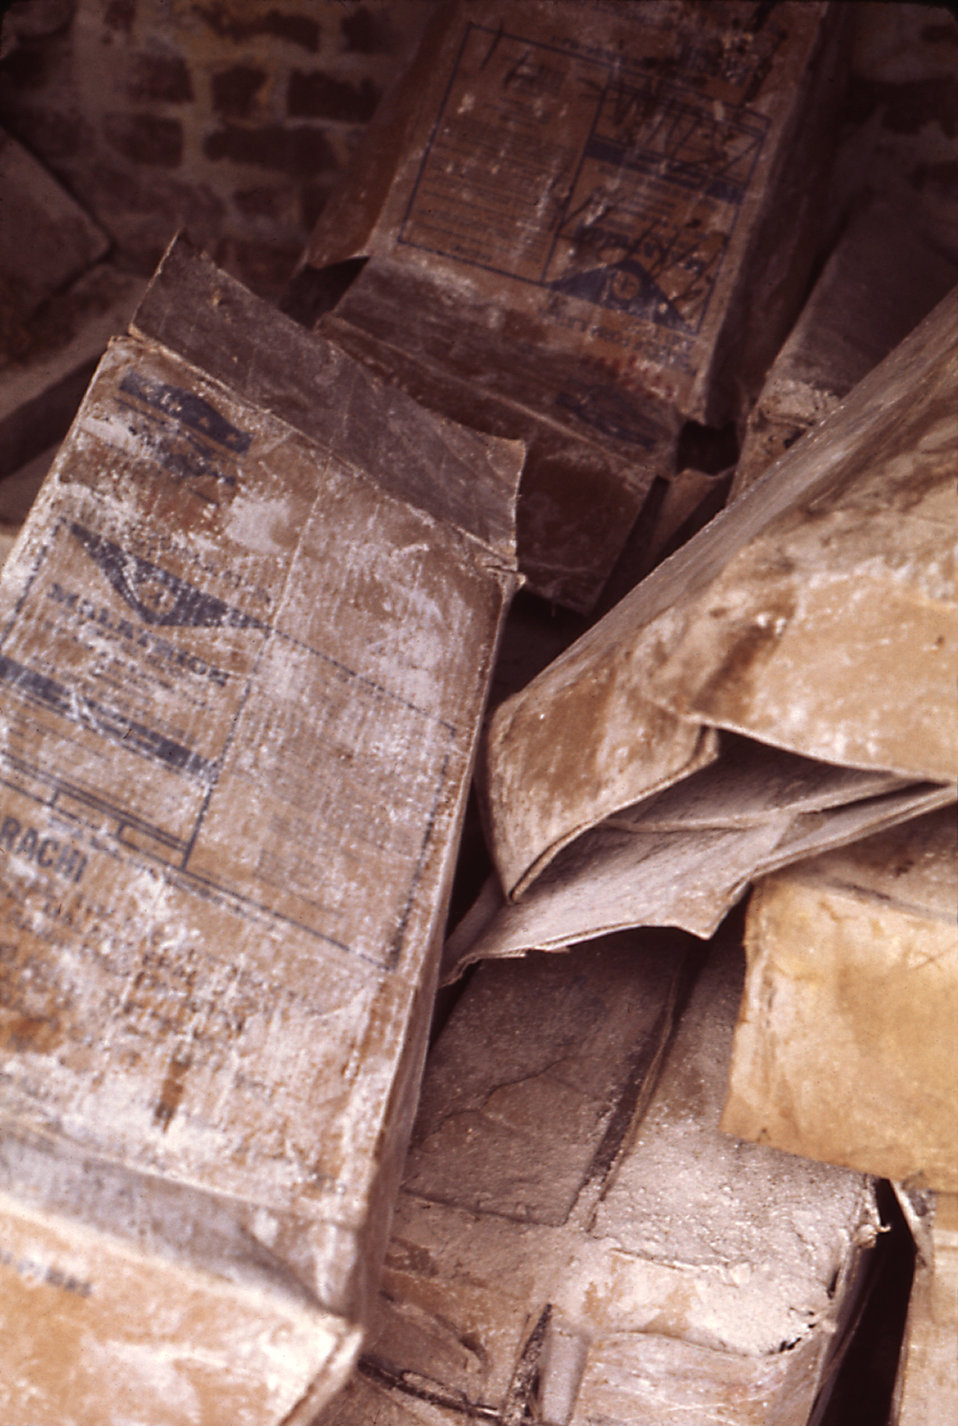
Storing malathion powder under conditions such as this can increase the dermal exposure to this toxic vector control chemical.